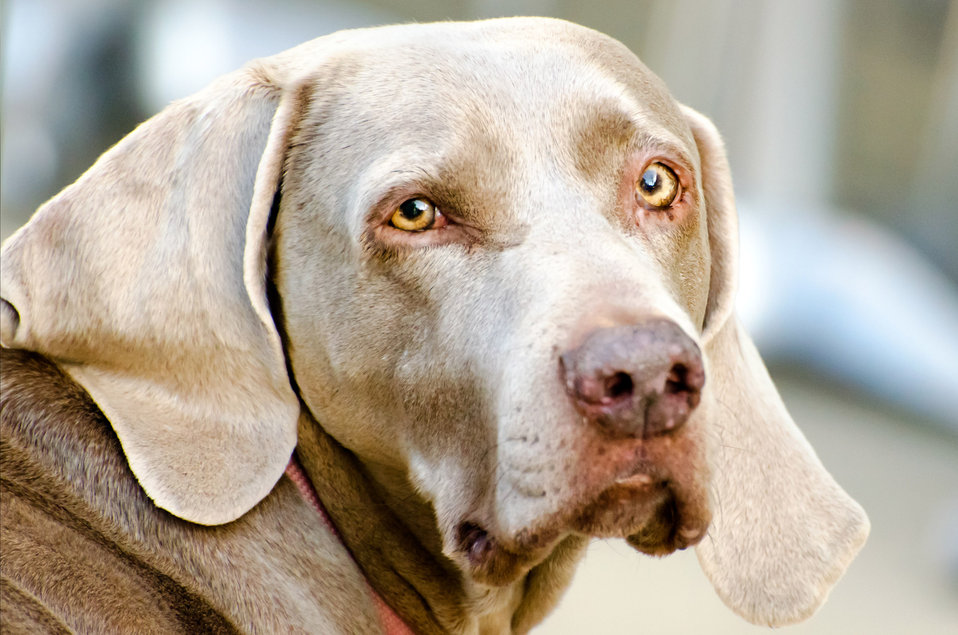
Dog - portrait.